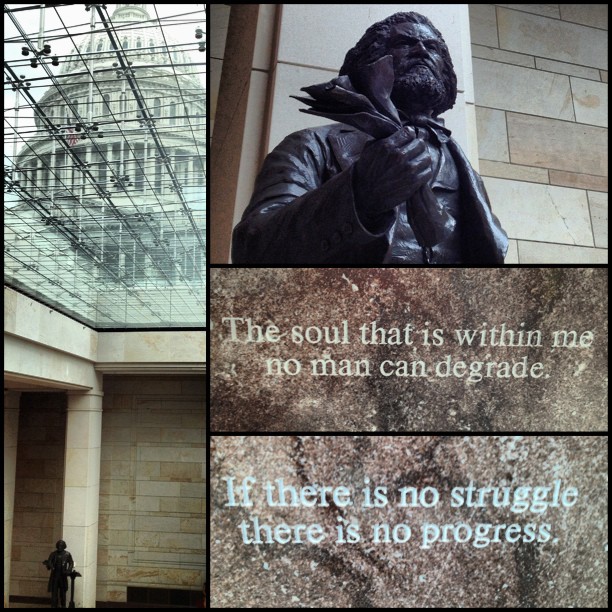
Frederick Douglass statue now on public view in Emancipation Hall at the Capitol.